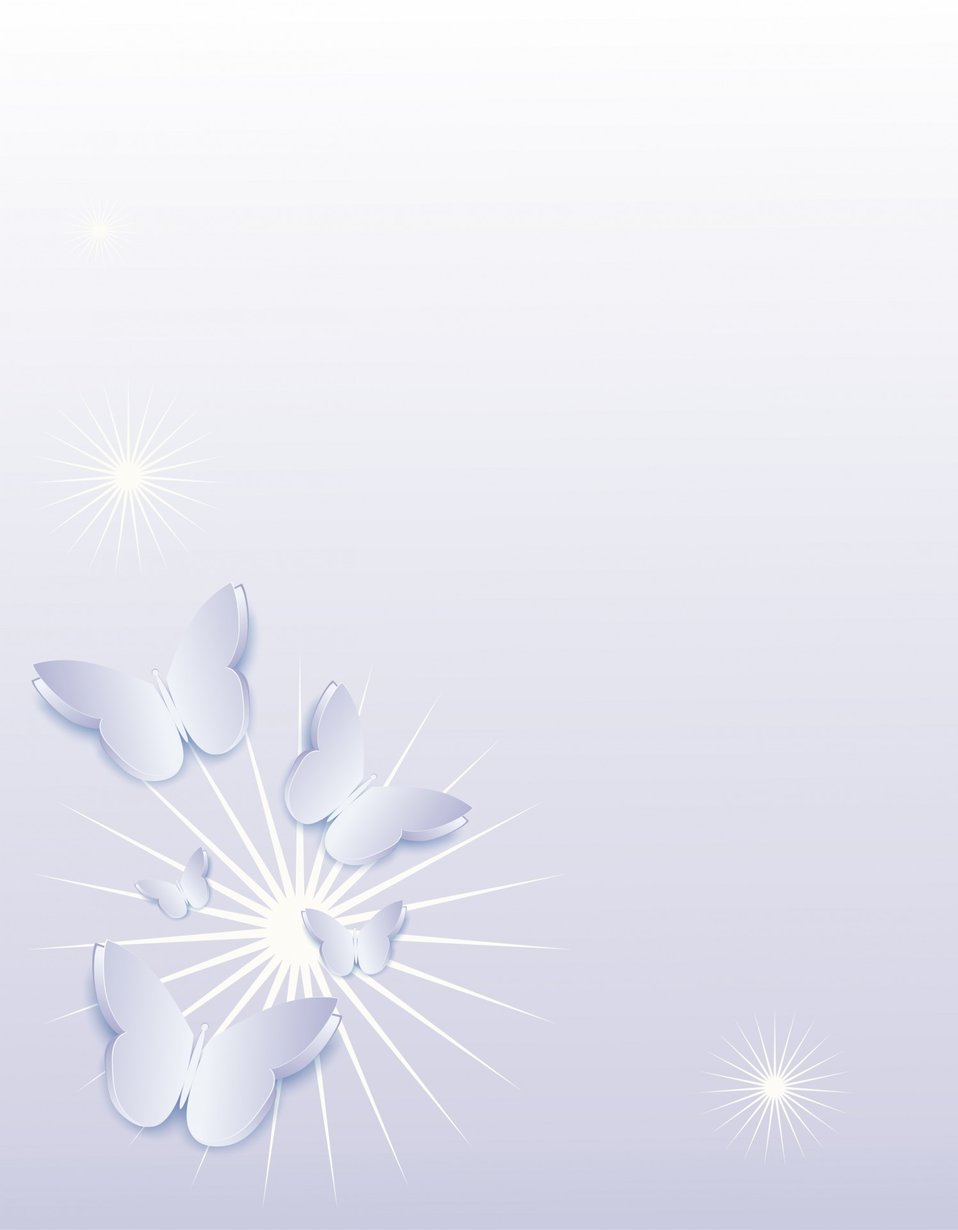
Background with butterflies

Background for text with butterflies.